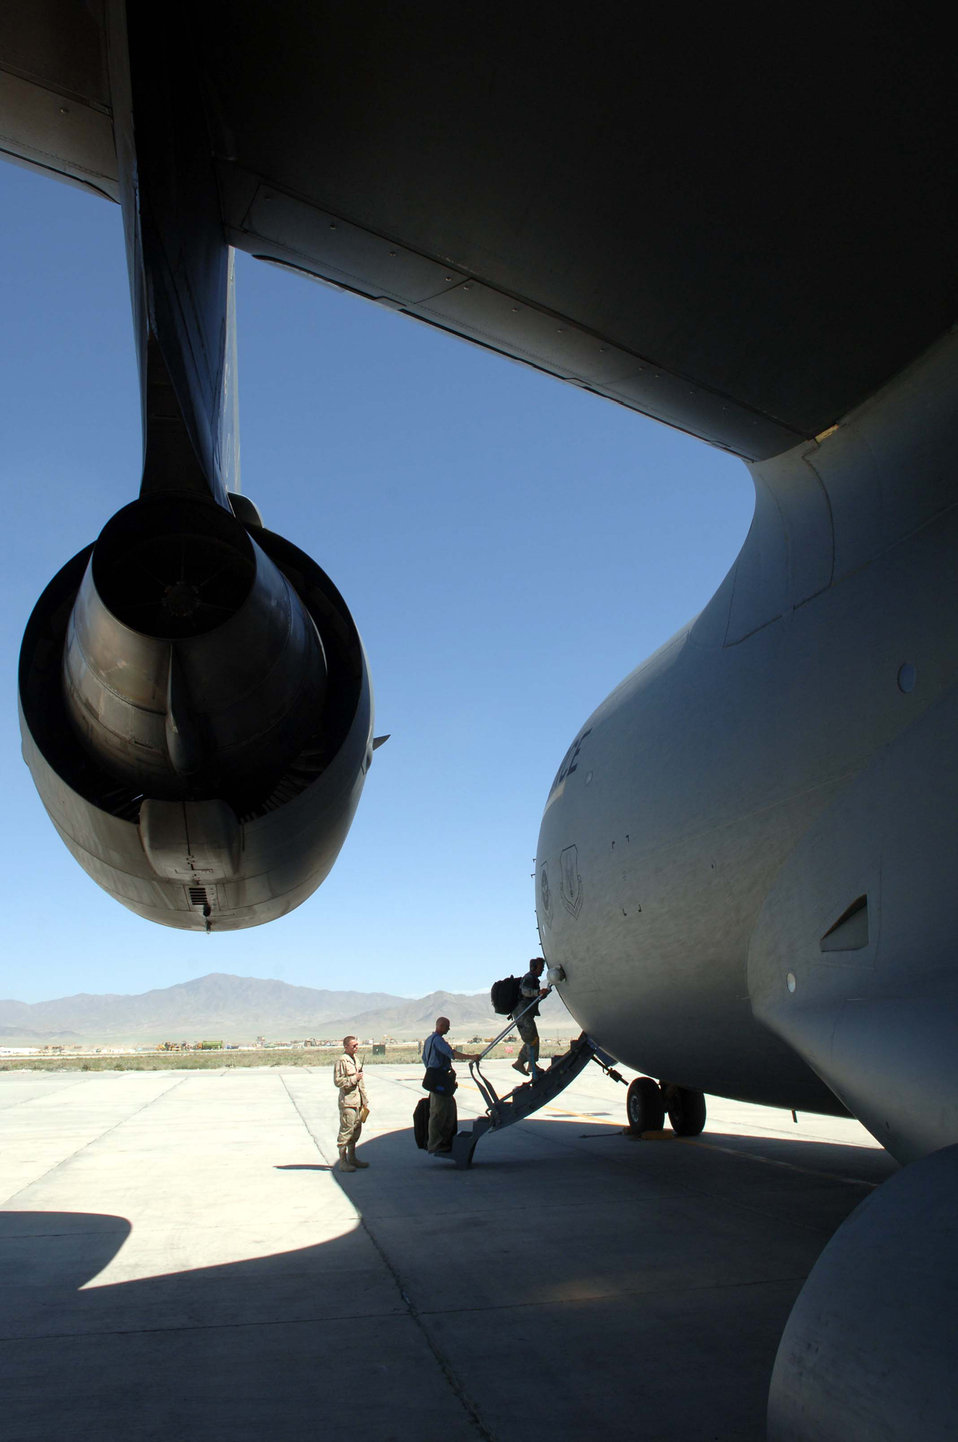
To destinations unknown

BAGRAM AIRFIELD, Afghanistan -- Travelers board a C-17 Globemaster for destinations unknown May 14. Bagram is the gateway to other bases and posts throughout Afghanistgan.